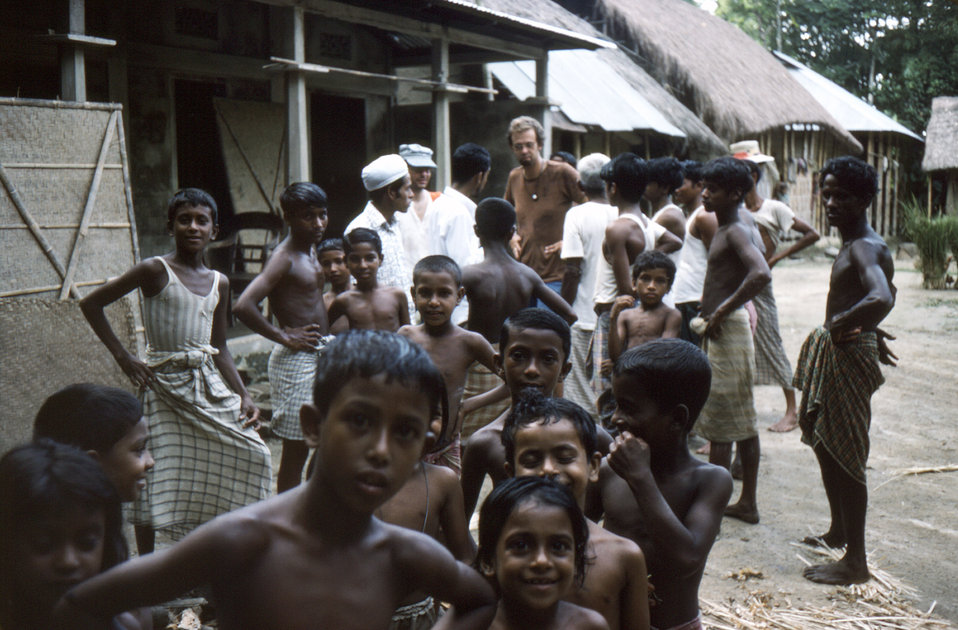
In this Sylet District village of north-eastern Bangladesh, were numbers villagers, and in the background, members of the public health smallpox eradication team, which included Dr. Patrice Engelberts, in a brown shirt, Dr. Michael Schwartz wearing his cap, and an accompanying translator, as they were being trained in how to conduct a national search for smallpox.